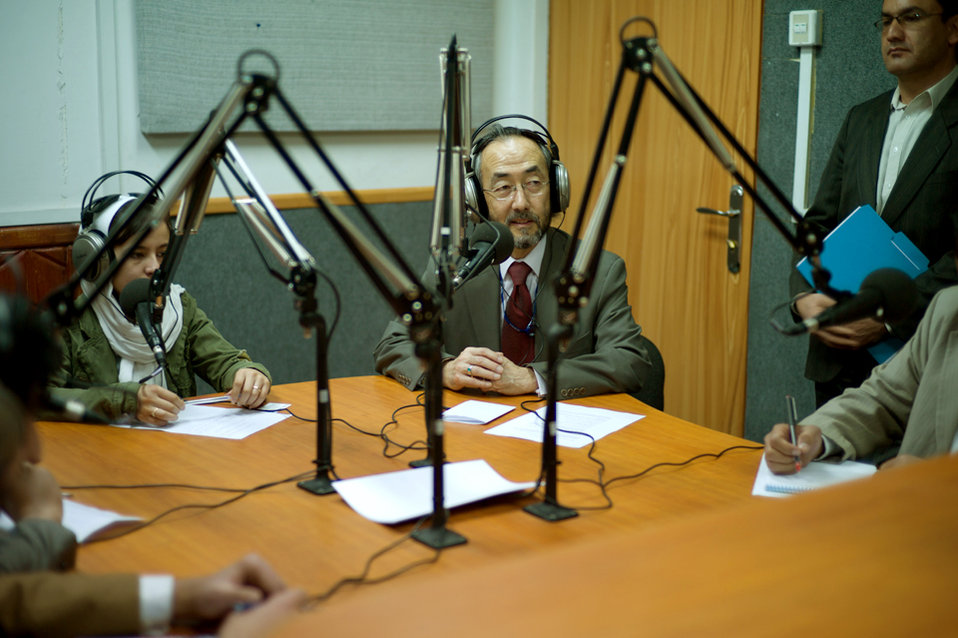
Ken in studio 1